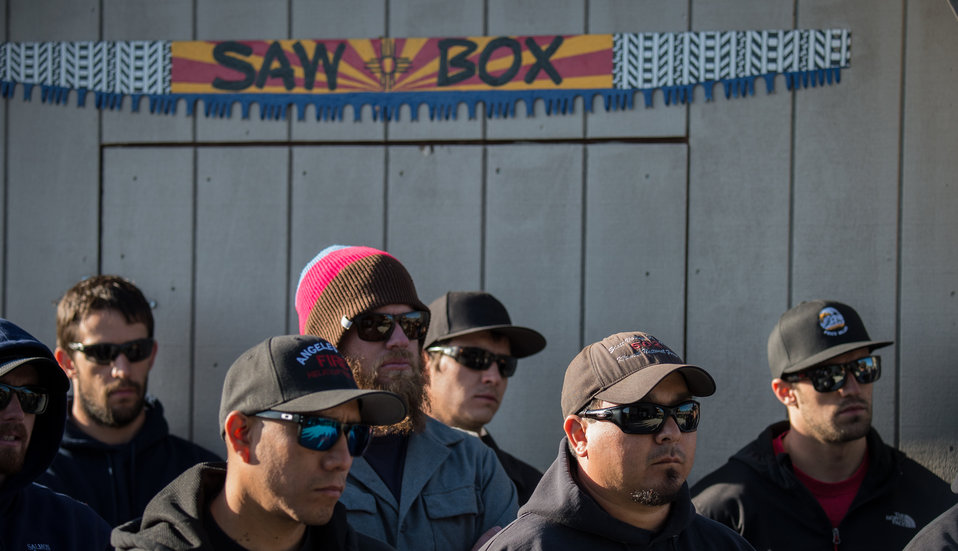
Veteran wildland firefighter rappellers listen closely to the morning safety briefing at the U.S. Department of Agriculture (USDA) U.S. Forest Service (USFS) National Helicopter Rappel Program’s Rappel Academy at Salmon Air Base in Salmon, ID on Wednesday, May 14, 2014. From May 12, 2014, 72 veteran rappellers from all over the nation, 30 support staff, and three helicopters with flight crews attend the training at Salmon Air Base. Participants will rappel into the Perreau Creek area. The annual training is delivered in accordance with the National Rappel Operations Guide; strengthen leadership, teamwork, and communications within the rappel community, and produces quality aerial delivered firefighters for use in fire and aviation operations. The USDA Forest Service National Helicopter Rappel Program’s primary mission is initial attack. Rappel crews may be utilized for large fire support, all hazard incident operations, and resource management objectives.